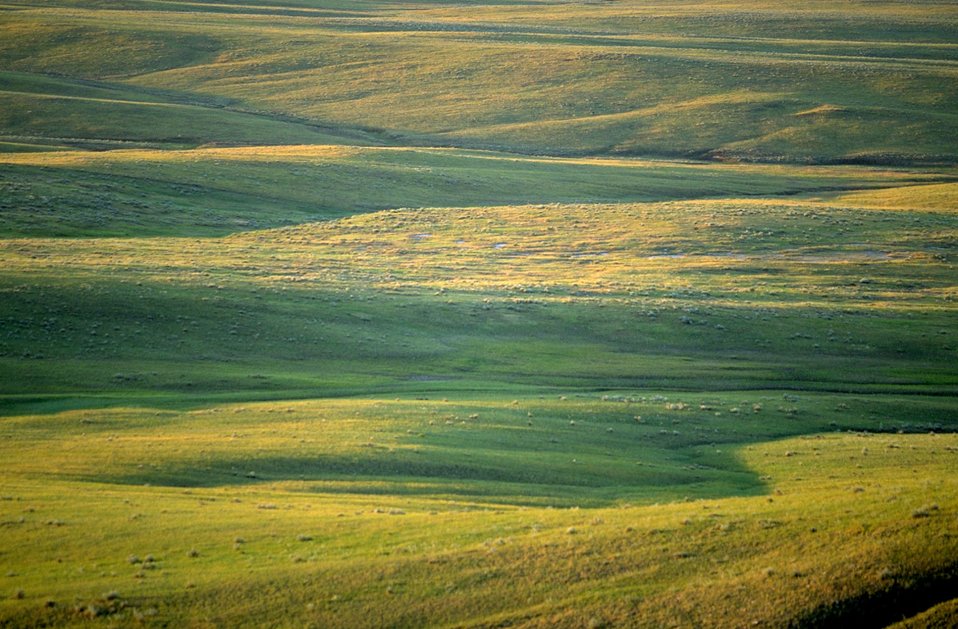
Grassland Vista 35 miles north of Belle Fourche